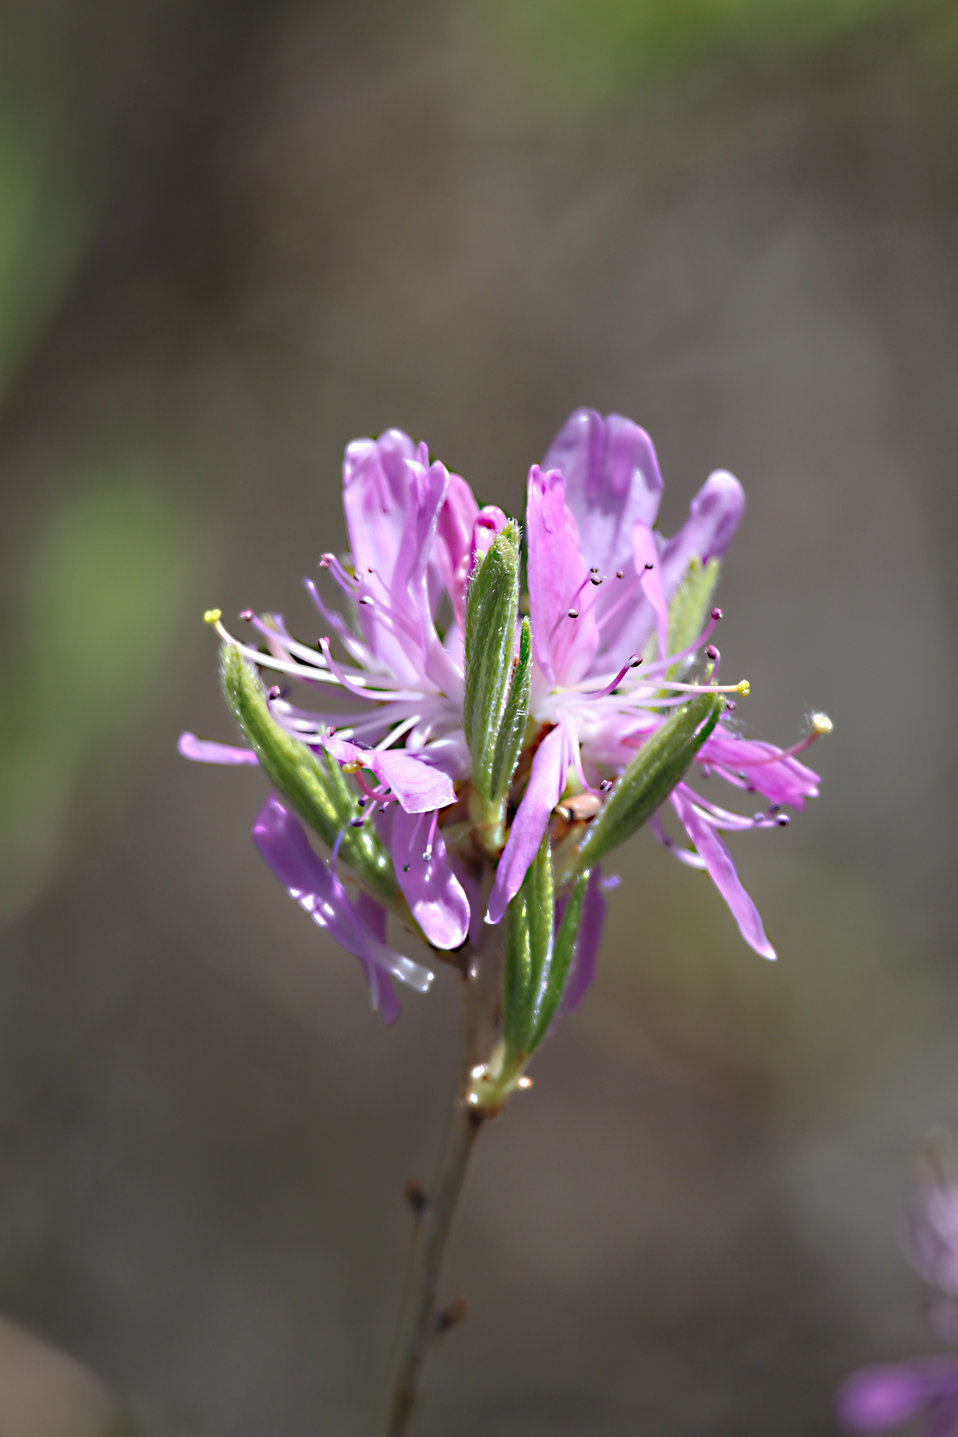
Rhodora in bloom

Rhodora-Missisquoi NWR
Photo Credit: Ken Sturm; USFWS